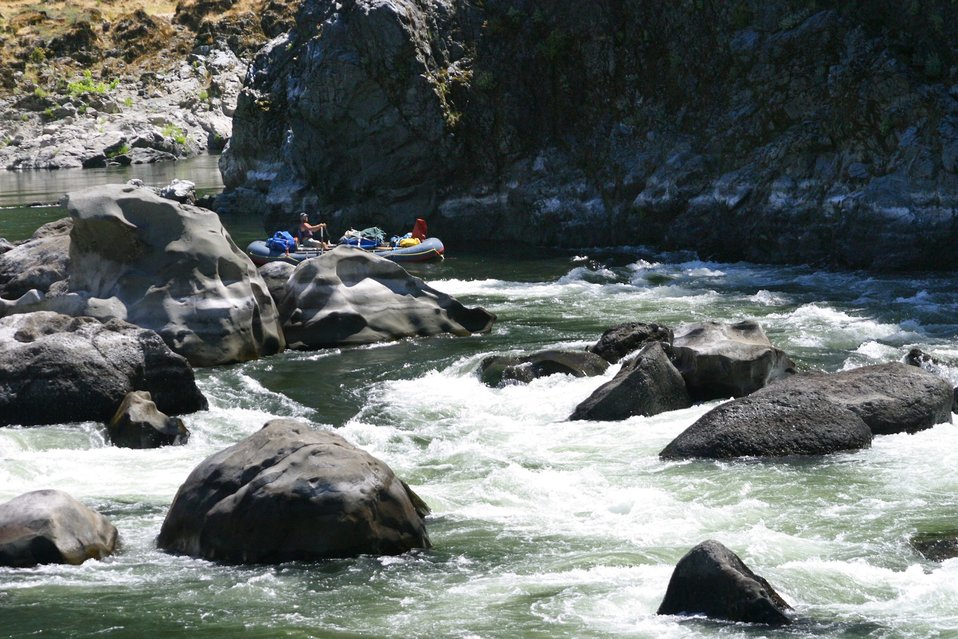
Boaters negotiate Blossom Rapids.